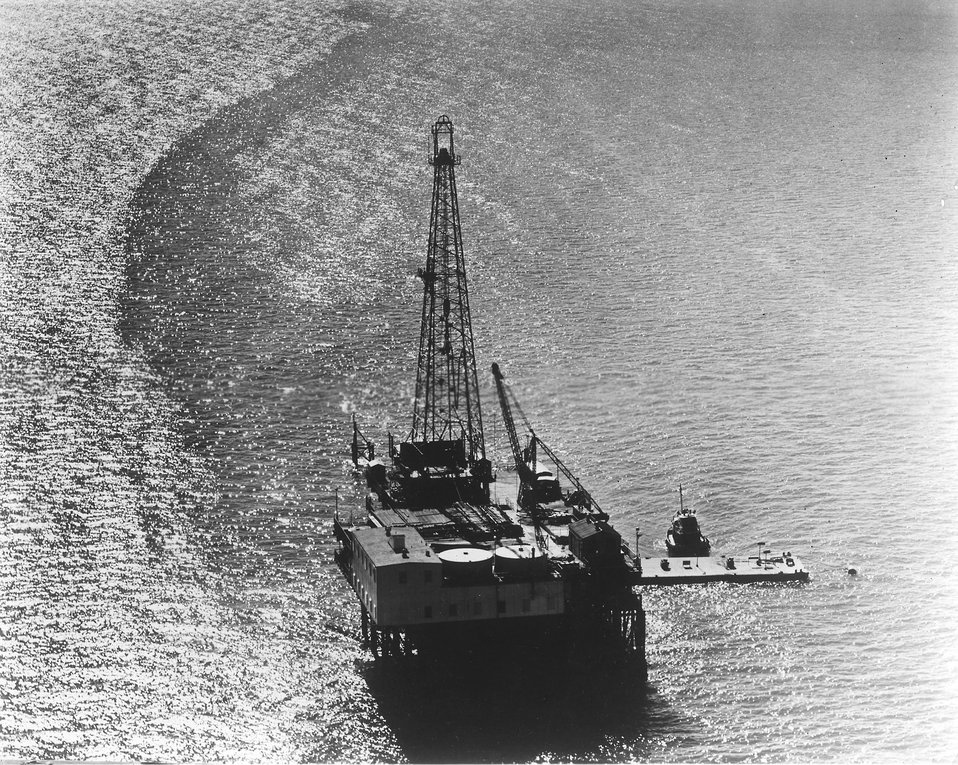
Offshore drilling is the new frontier being explored to meet the increasing demand for petroleum. c. 1970